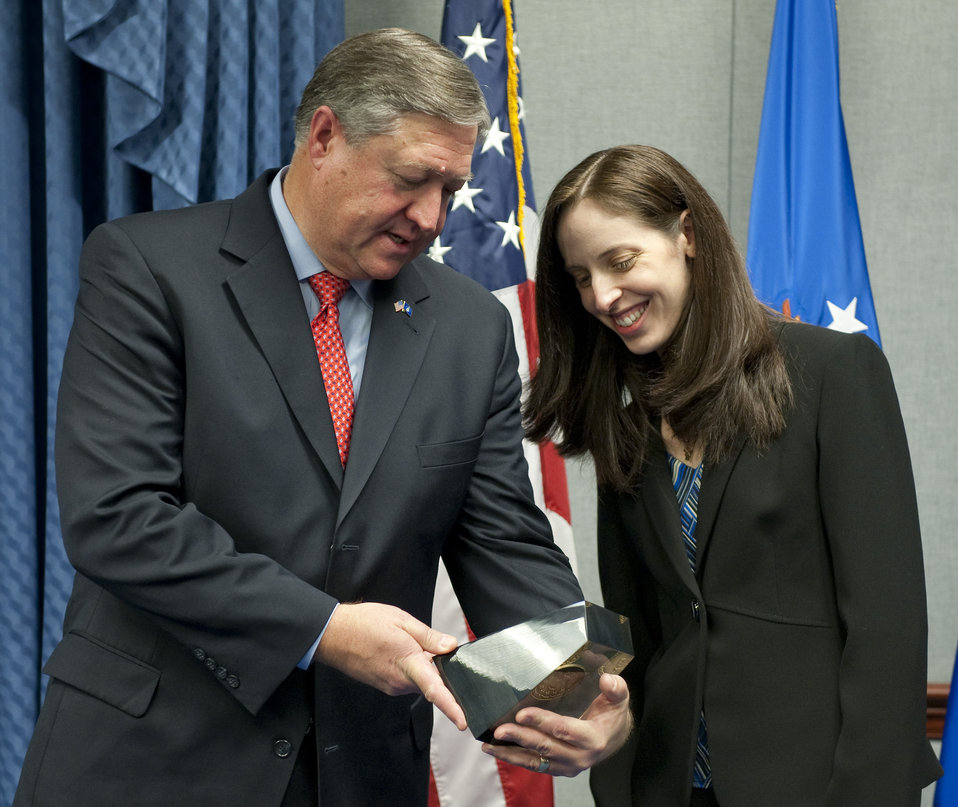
2010 Harold Brown Award

Secretary of the Air Force Michael Donley presents the 2010 Harold Brown Award to Dr. Candace Lynch during a ceremony in the Pentagon Dec. 15, 2010. The award was named for Harold Brown, a physicist who served as secretary of the Air Force from 1965 to 1969. Dr. Lynch is the first female recipient of the award since its inception in 1969.